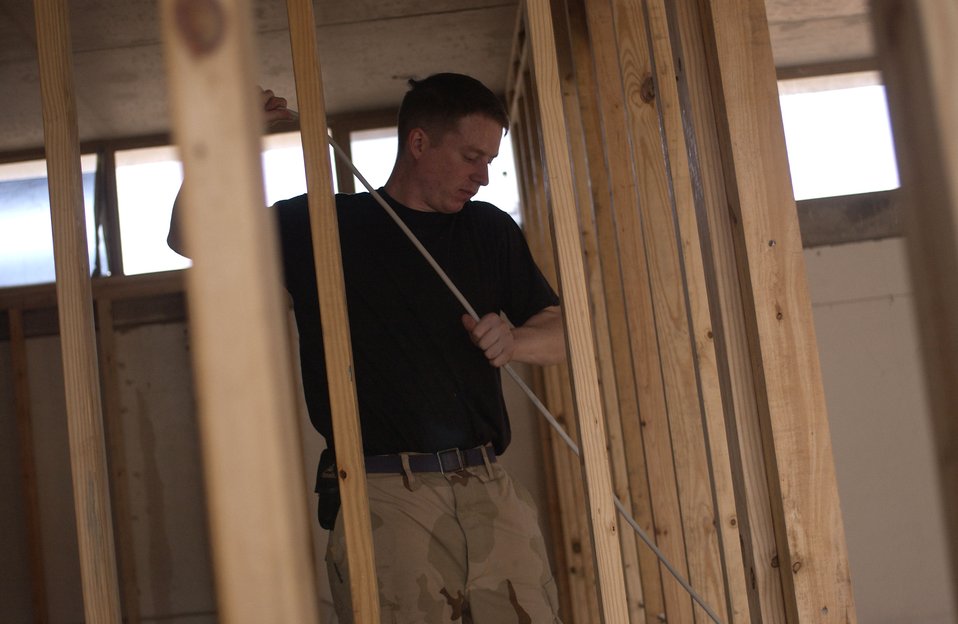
Office renovation

Senior Airman Brian Hess pulls wiring for the electric lines during renovation of an office building at Balad Air Base, Iraq, on Thursday, April 20, 2006. Airman Hess is with the 557th Expeditionary Red Horse Squadron.